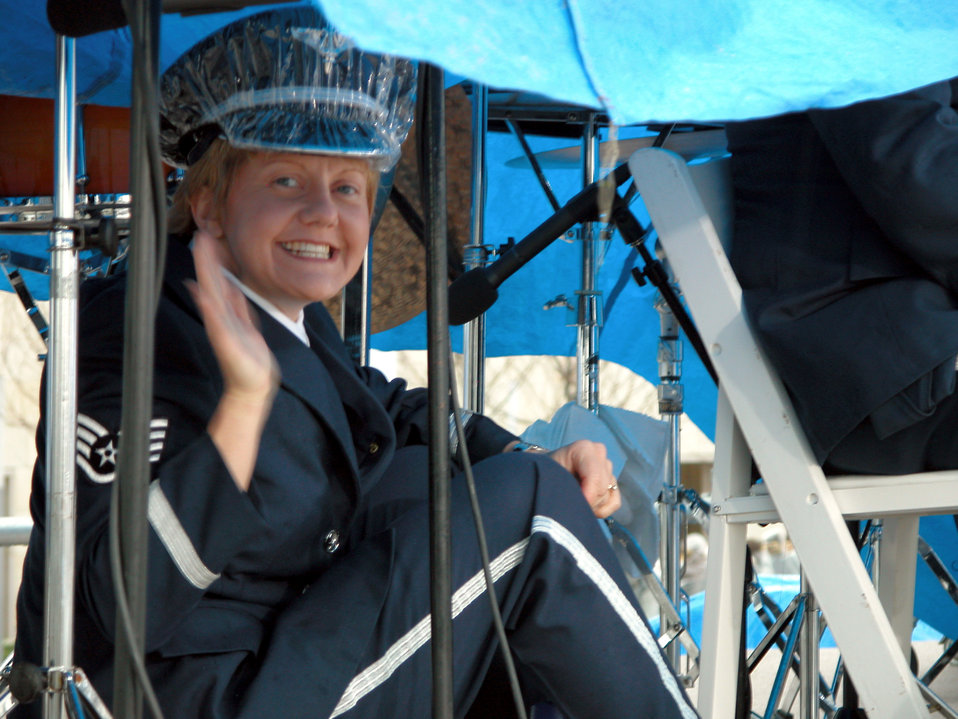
Air Force band performs at Clinton library opening

LITTLE ROCK, Ark. -- Staff Sgt. Christine McGowan, a percussionist in the Air Force Band of Mid-America, waves to the crowd while trying to avoid the rain Nov. 18 at the William J. Clinton Presidential Library grand opening. The rain did not stop the band's performance as it played patriotic music to entertain an estimated 30,000 visitors.